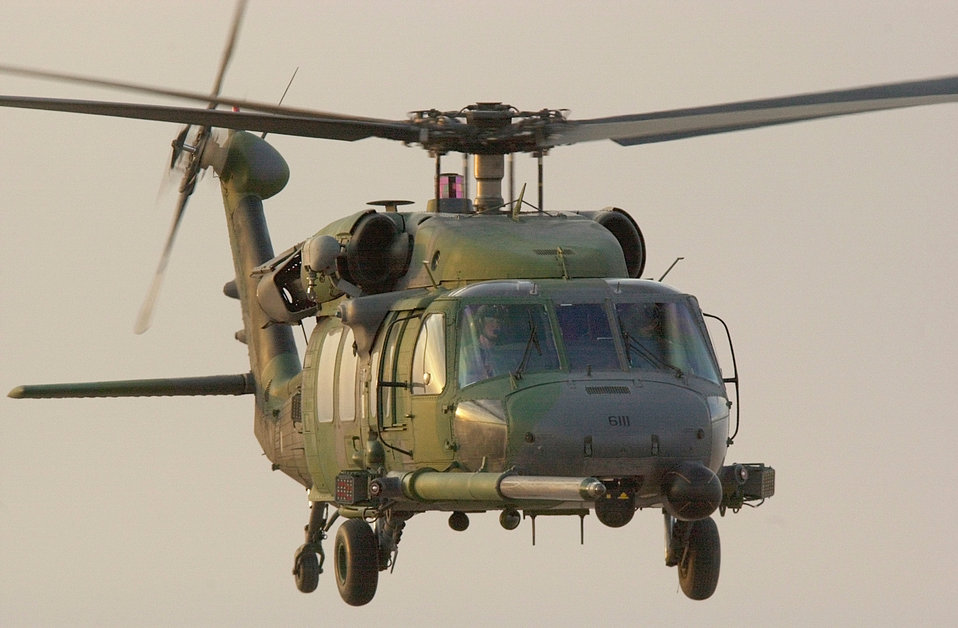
Pave Hawk in flight

OPERATION SOUTHERN WATCH -- An HH-60G Pave Hawk flies through the sky after refueling from an HC-130P Combat Shadow during a training mission at an operating location in support of Operation Southern Watch. The primary mission of the HH-60G Pave Hawk helicopter is to conduct day or night operations into hostile environments to recover downed aircrew or other isolated personnel during war. Because of its versatility, the HH-60G is also tasked to perform military operations other than war. These tasks include civil search and rescue, emergency aeromedical evacuation (MEDEVAC), disaster relief, international aid, counter-drug activities and NASA space shuttle support.